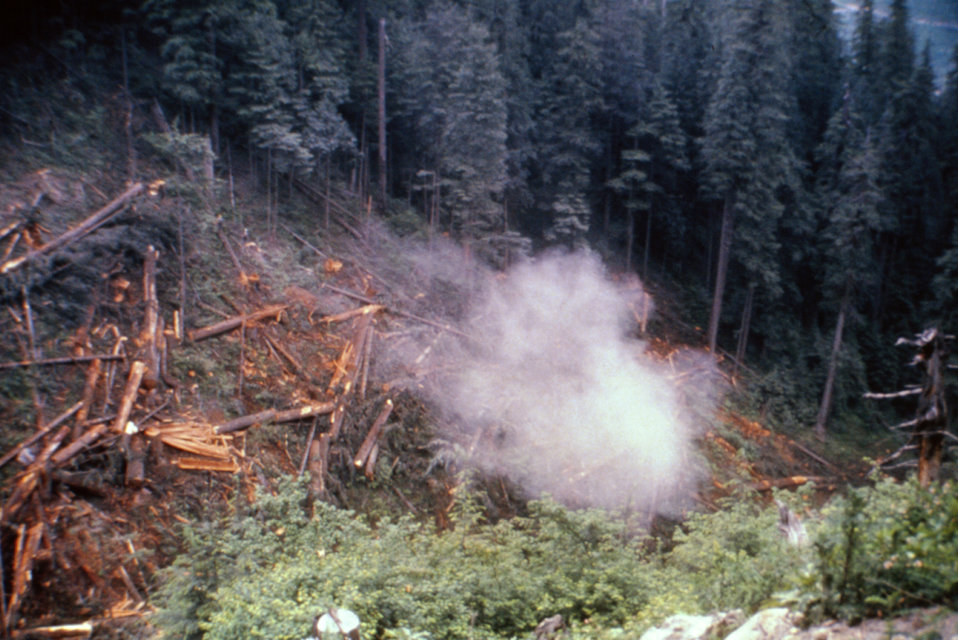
This photograph shows an area where volcanic ash was collected for a CDC study after the 1980, Mount St. Helens eruption.